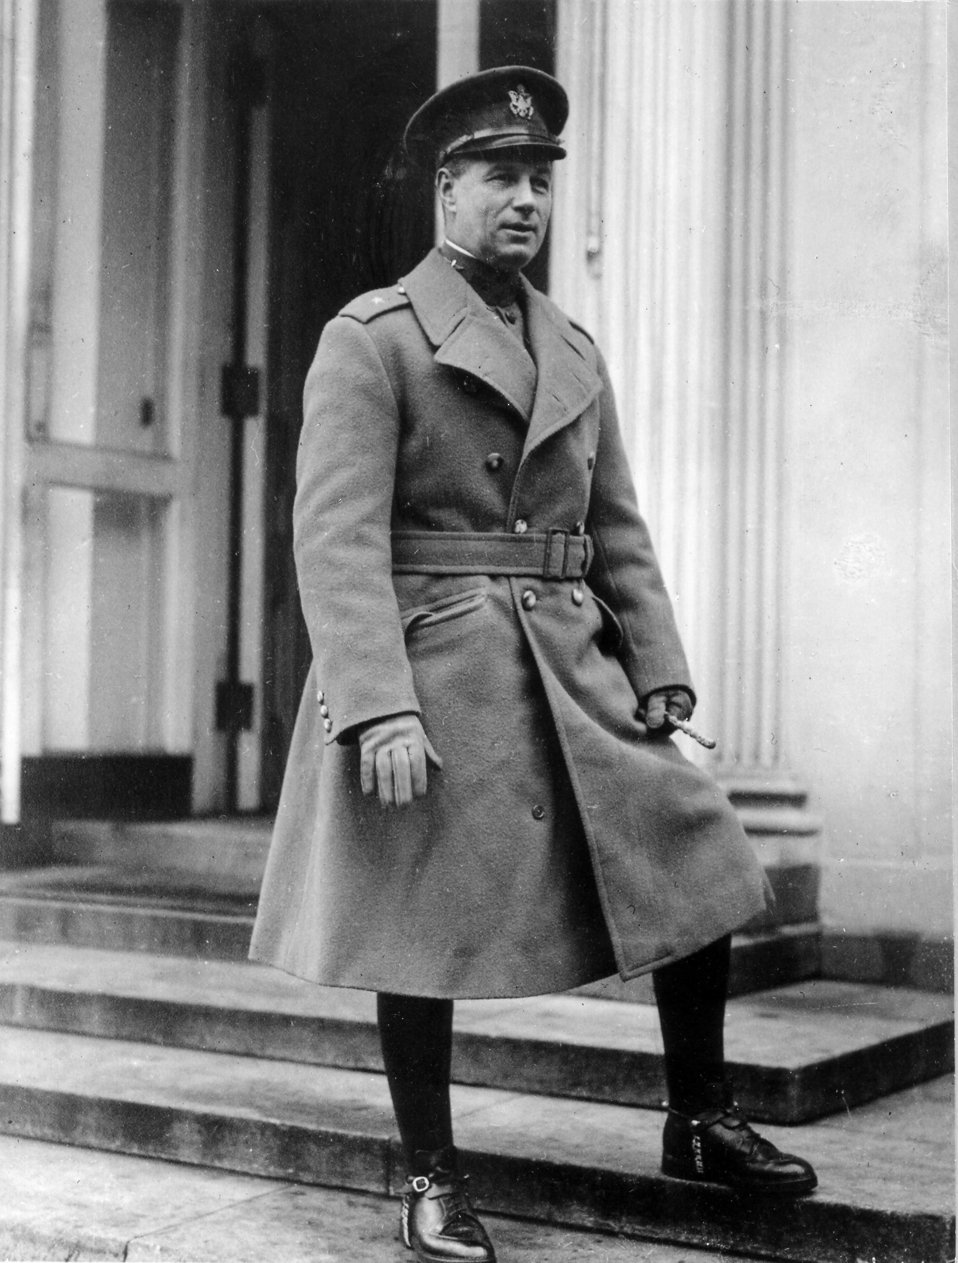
General Mitchell

Brig. Gen. William